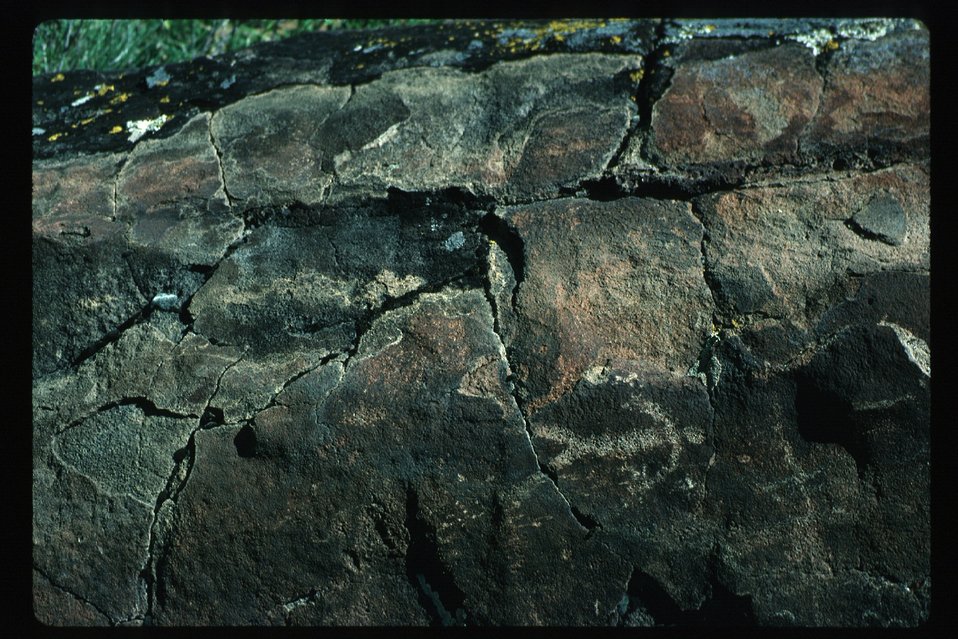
Camas Creek petroglyphs Archeology LSRD Lower Snake River District